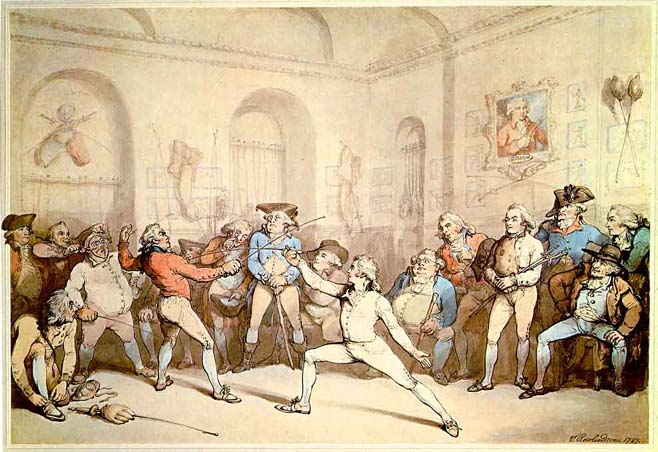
'I shall conquer this', Rowlandson, 1787